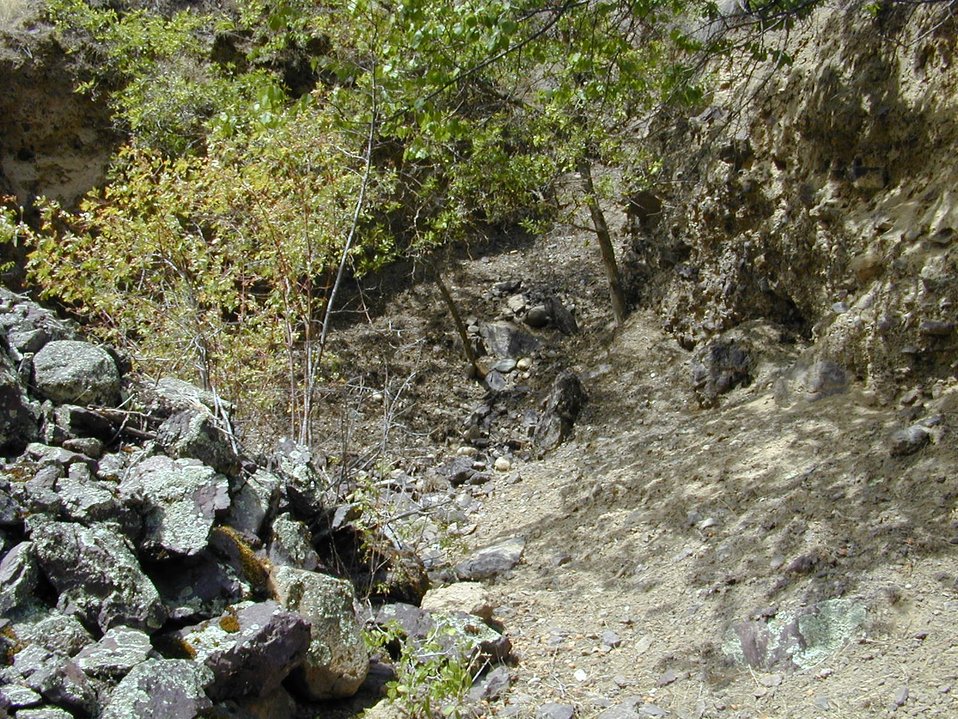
Hackbeerry Cottonwood Field Office UCSC Upper Columbia Salmon Clearwater Districtr